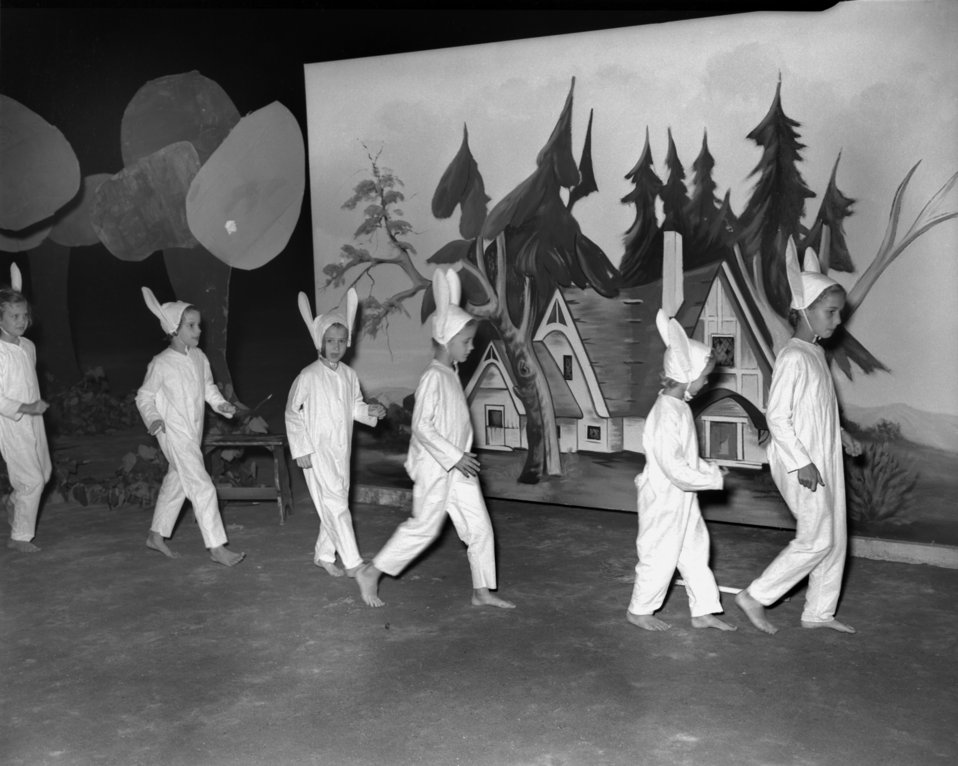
Snow White Play Oak Ridge

005178-3 DOE photo by Ed Westcott

Recreation 'Snow White' Playground Pageant at Oak Wood Park
Oak Ridge Tennessee 8/19/1948